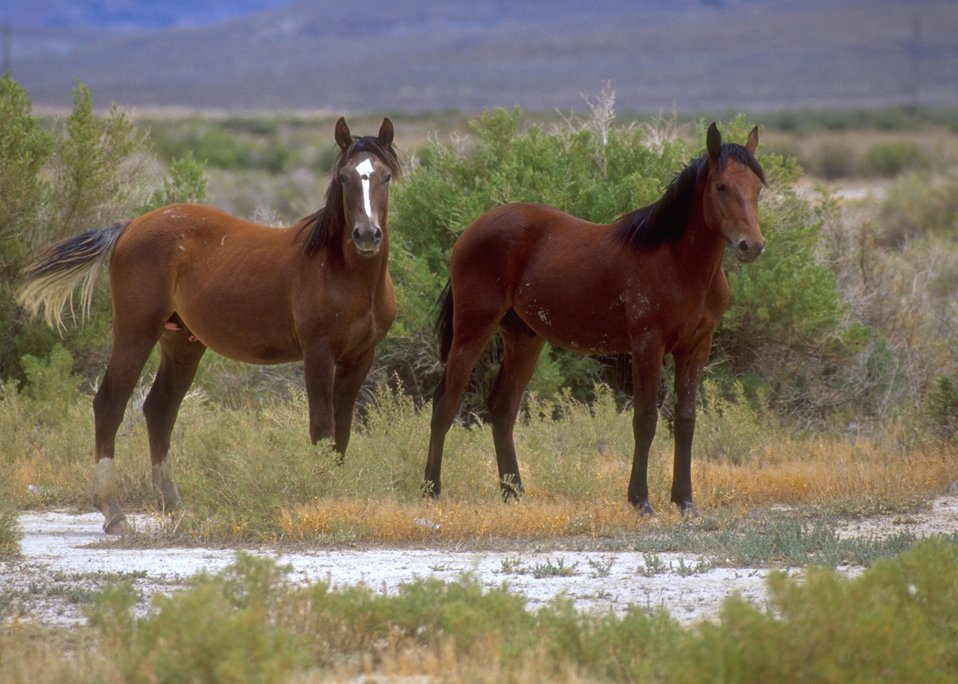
Wild horses, Rock Springs Field Office.